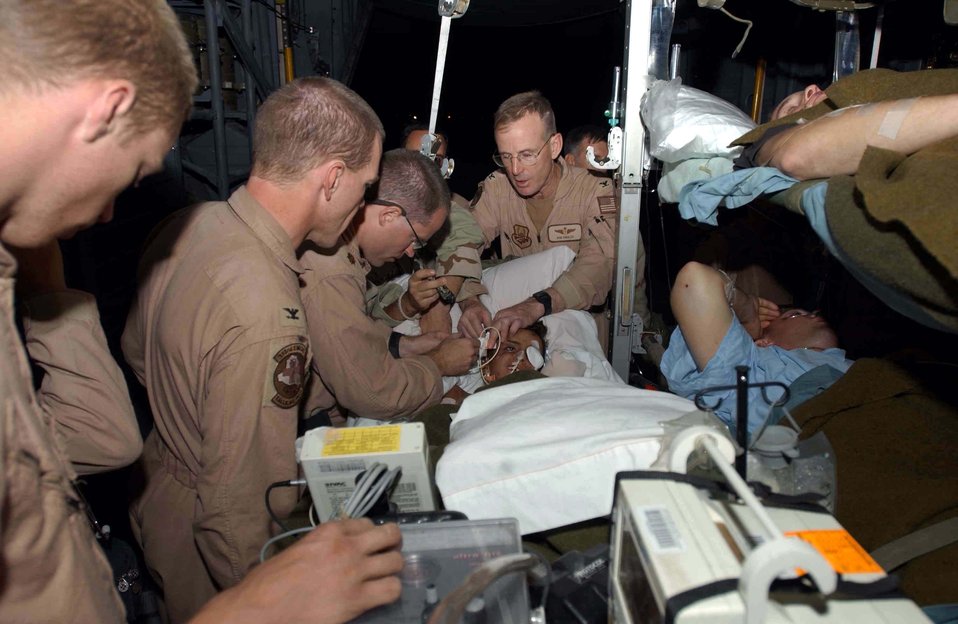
Mending the wounded

TALLIL AIR BASE, Iraq -- Critical-care transport team airmen prepare 9-year-old Saleh Kahlaf for an aeromedical evacuation flight from here to Children's Hospital and Research Center in Oakland, Calif., on Nov 8. Saleh was critically injured by a land mine near his school in Al Nasiriyah and had been cared for by 332nd Expeditionary Medical Squadron airmen until his flight.